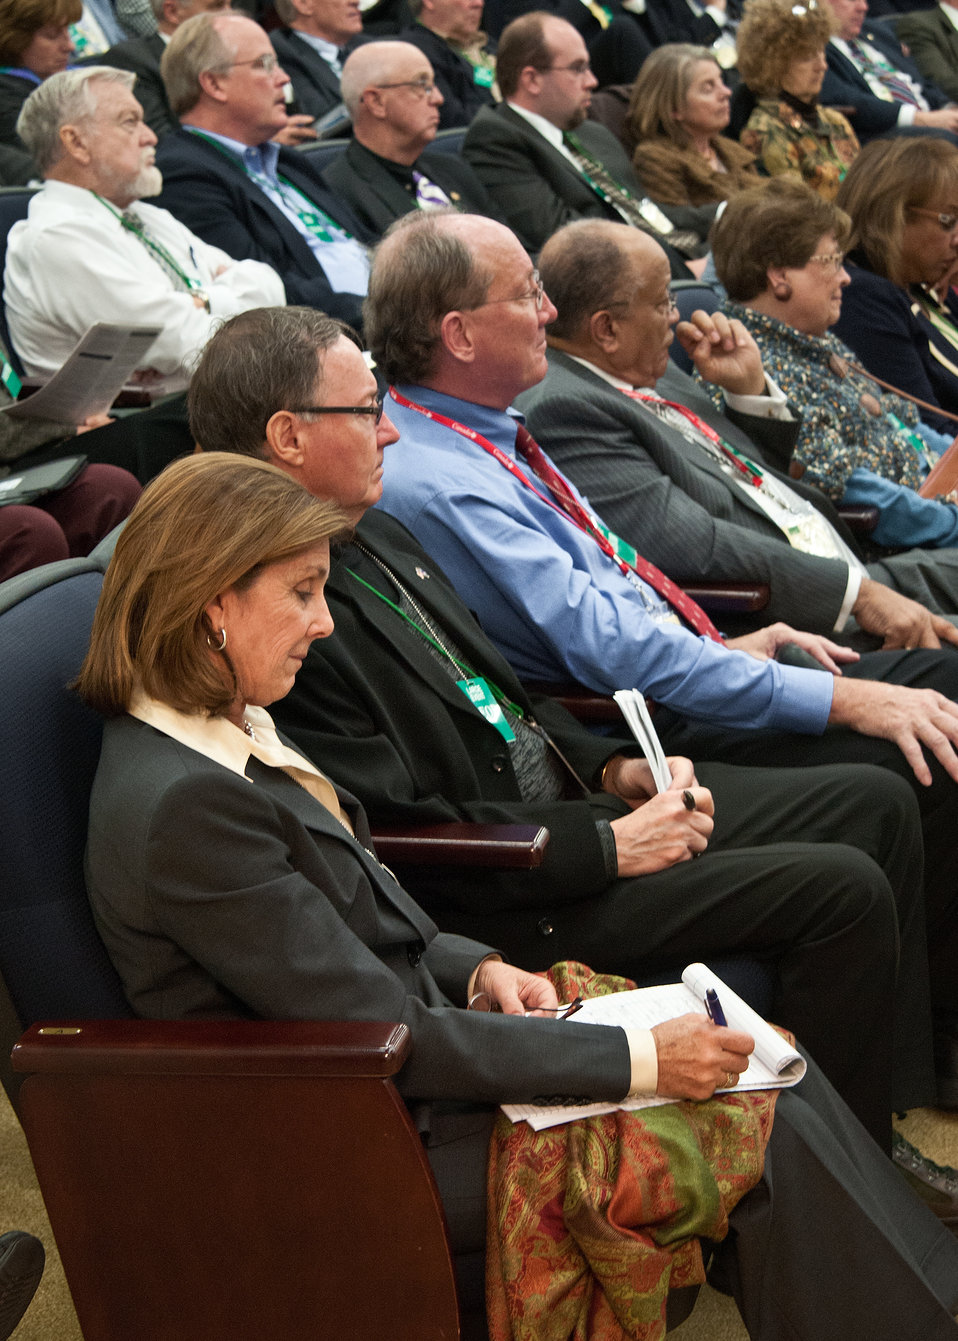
State Senator Gail Schwartz, Colorado takes notes during the 11th Annual Meeting of State Agriculture and Rural Leaders at the Eisenhower Executive Office Building in Washington, D.C., on Friday, January 6, 2012.